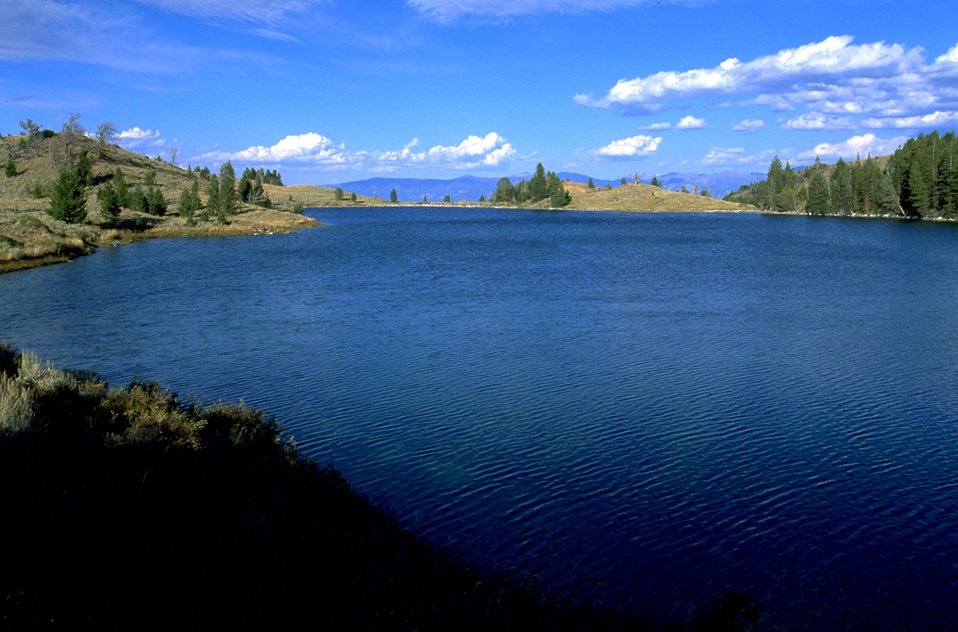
Reservoir Lake